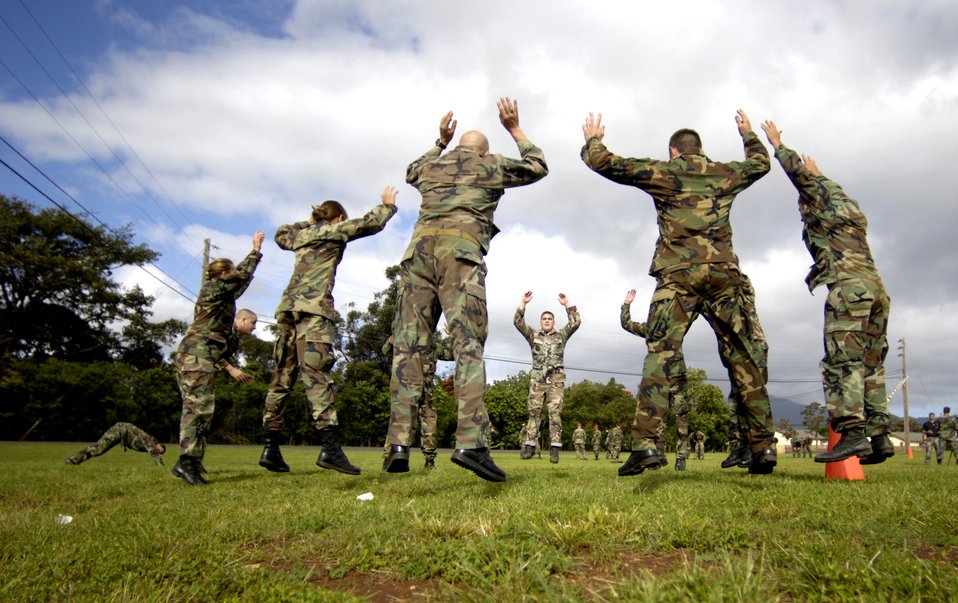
Close-combat skills

Tactical air controllers from the 25th Air Support Operations Squadron finish their close-combat skills training with circuit training on Thursday, April 13, 2006, at Wheeler Army Air Field, Hawaii.